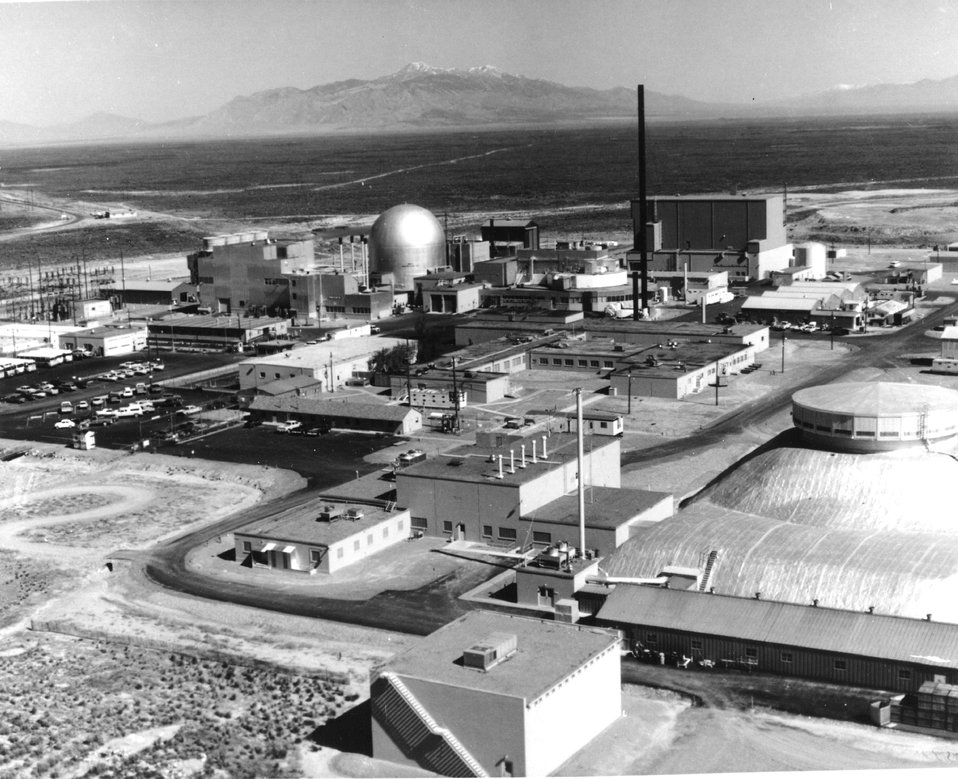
Aerial view of Argonne National Laboratory. c. 1979